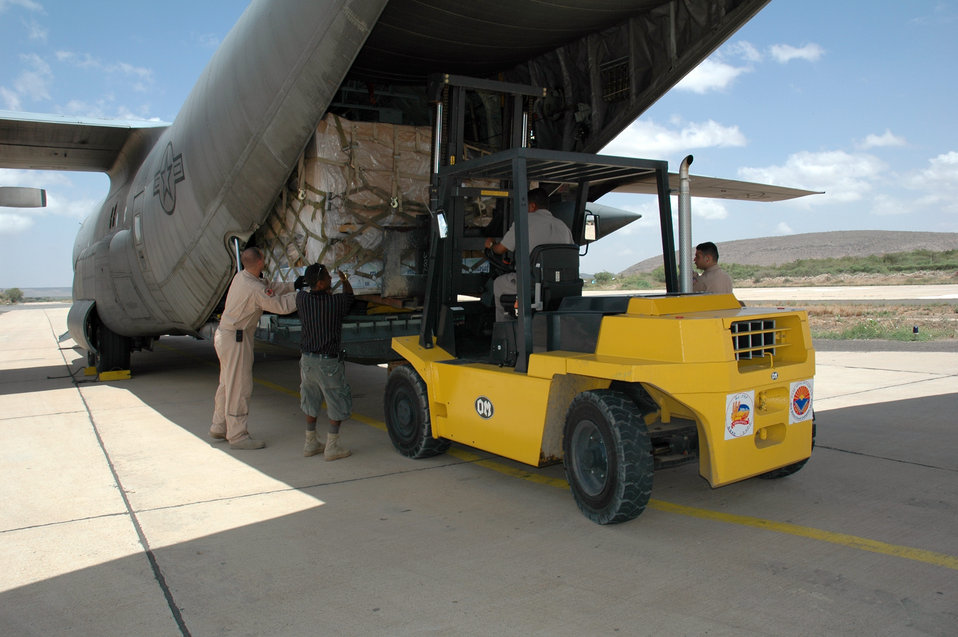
Lifeblood of Africa

Senior Airman Chris Sutton and Master Sgt. Ramon Feliciano help unload humanitarian supplies off a C-130 Hercules in Kenya. The humanitarian effort is part of the Combined Joint Task Force - Horn of Africa - Flex mission. Airman Sutton is a crew chief and Sergeant Feliciano is a loadmaster with the 746th Air Expeditionary Wing.